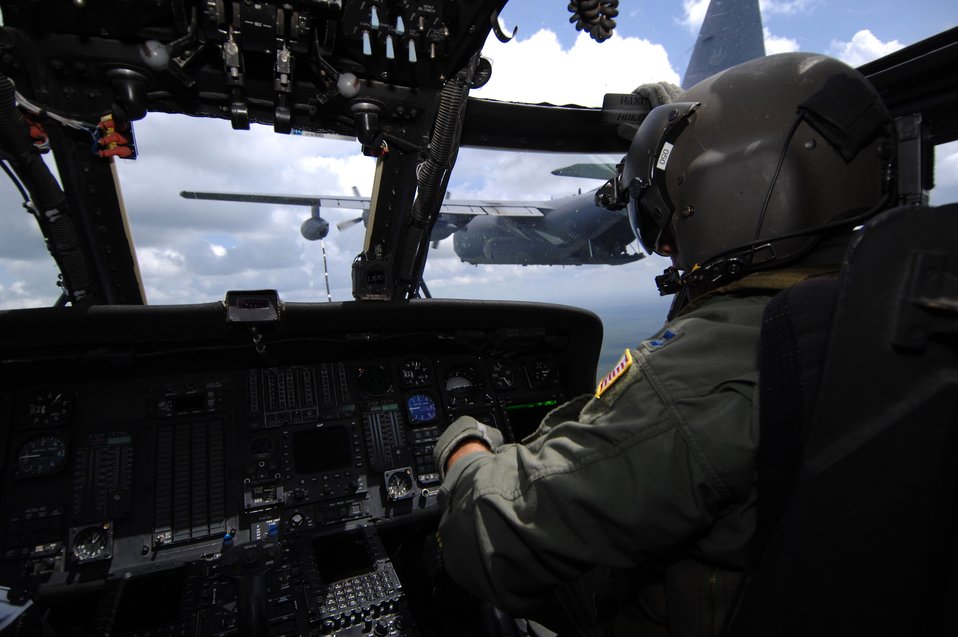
Doing something amazing

Capt. Jason Chambers monitors the flight instruments in his HH-60 Pave Hawk during an aerial refueling mission with a HC-130P June 27. The mission was being filmed by a video production team for the Air Force recruiting campaign,